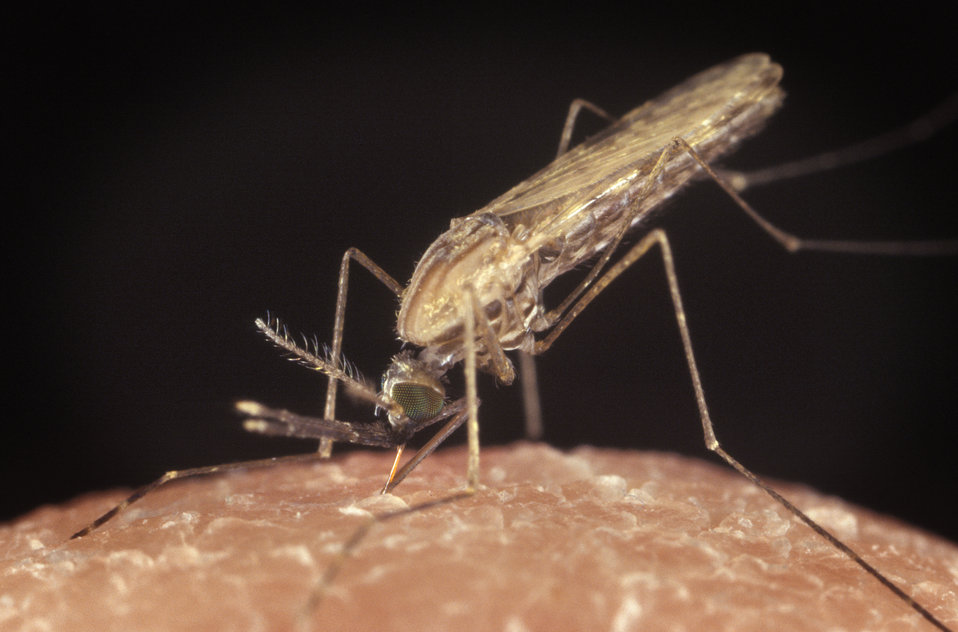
Female Anopheles gambiae mosquito feeding on a human host.